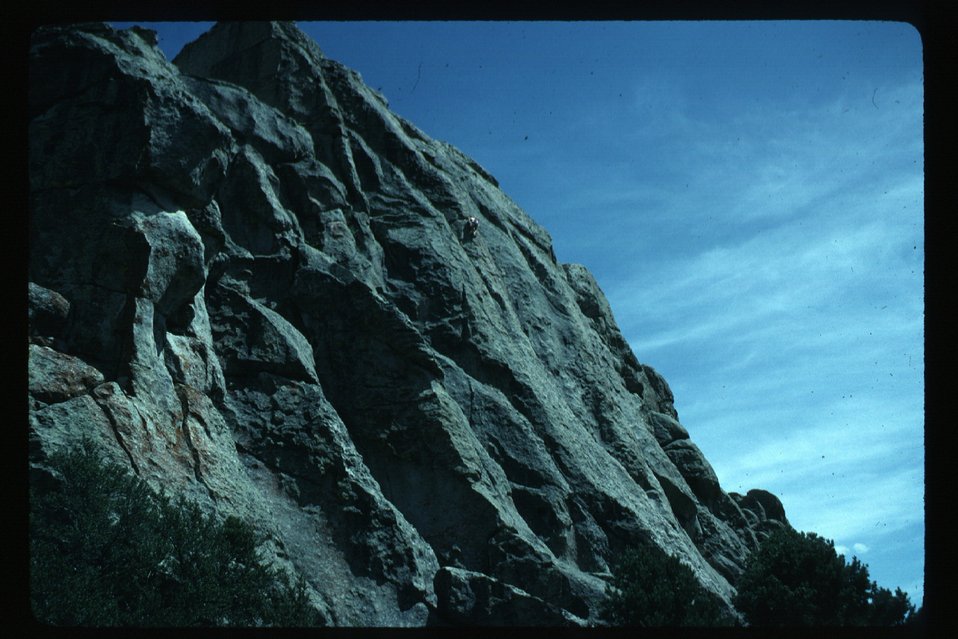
Rock climber Burley City of Rocks Burley Field Office USRD Upper Snake River District